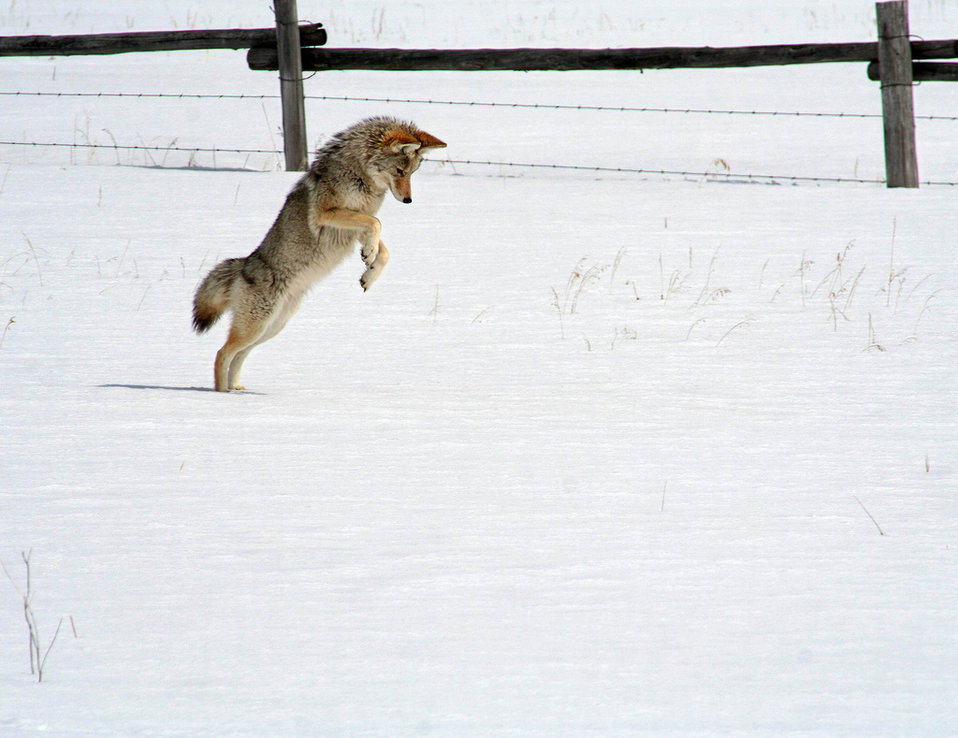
coyote jumping

Uploaded for Flickr member vott66.

Coyote mousing along a fence row near Jackson Hole, WY